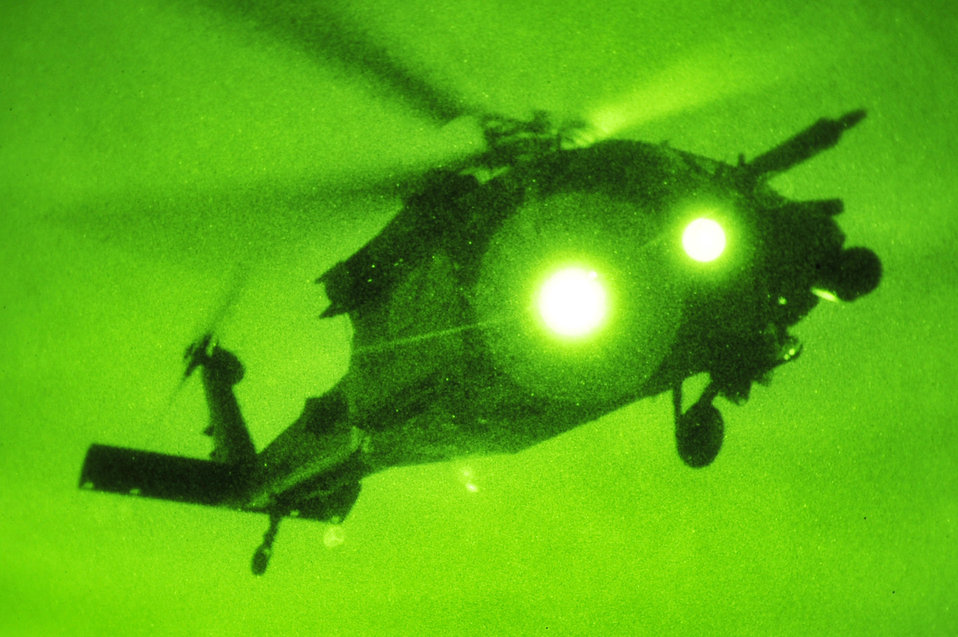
Kadena Airmen test readines during exercise

A 33rd Rescue Squadron HH-60 Pave Hawk takes off with three rescued aircrew from the 909th Air Refueling Squadron after a simulated KC-135 Stratotanker crash March 25, 2010, at Kadena Air Base, Japan. Members of the 909th ARS spent the afternoon training proper survival and evasion procedures. The 18th Wing participated in a local operational readiness exercise to test base Airmen's ability to defend Japan and maintain peace and stability in the Pacific region.